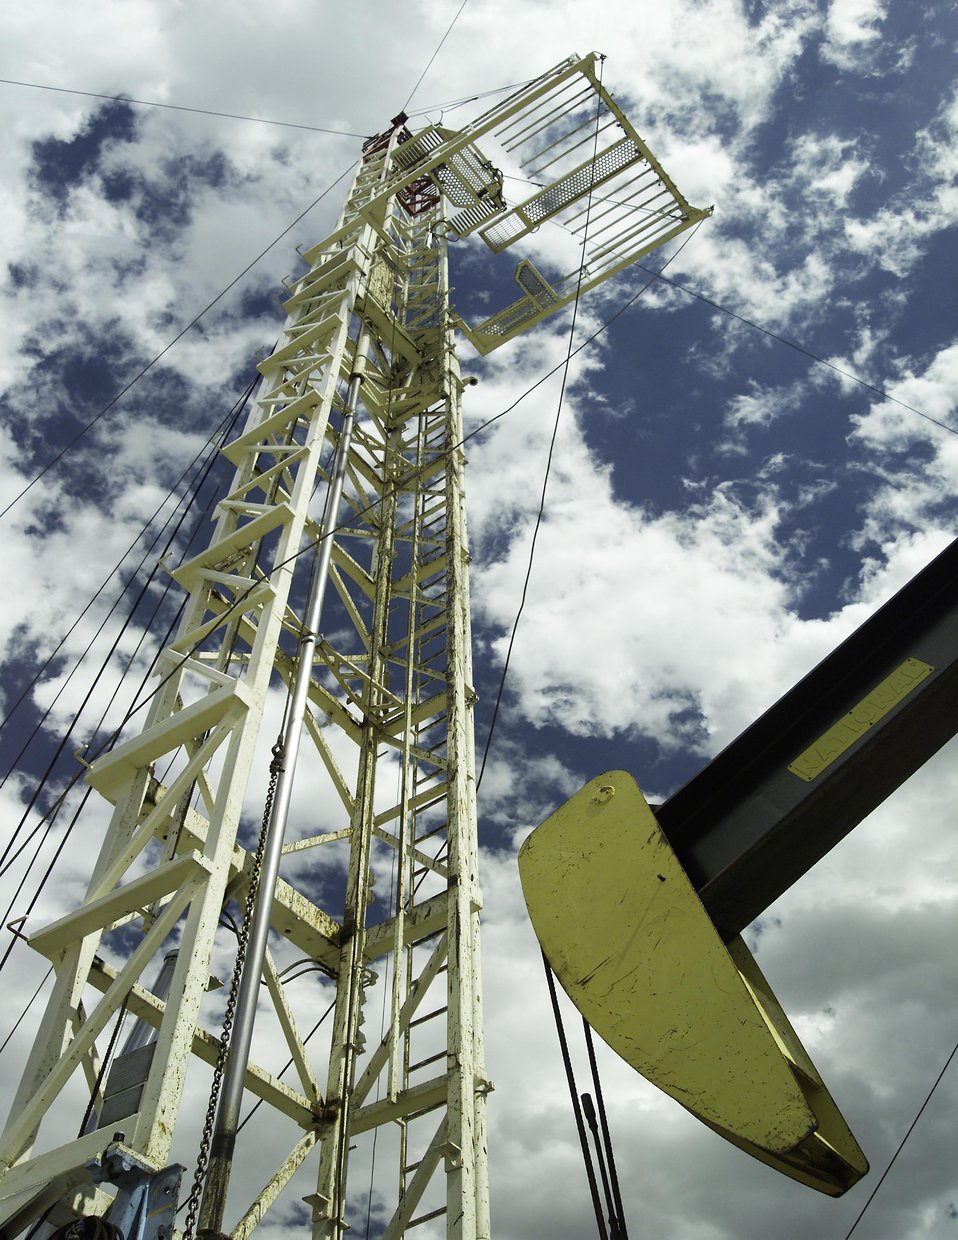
Work over rig at Naval Petroleum Reserve No.3 (NPR-3) near Casper, Wyoming.

The Rocky Mountain Oilfield Testing Center (RMOTC) is a Department of Energy field test site for emerging and developing technologies to address critical energy issues. The field test site, located on Naval Petroleum Reserve No.3 (NPR-3), is a 10,000-acre site. There are approximately 700 well bores with 600 producing wells ranging in depth from 500 to 5,000 feet.